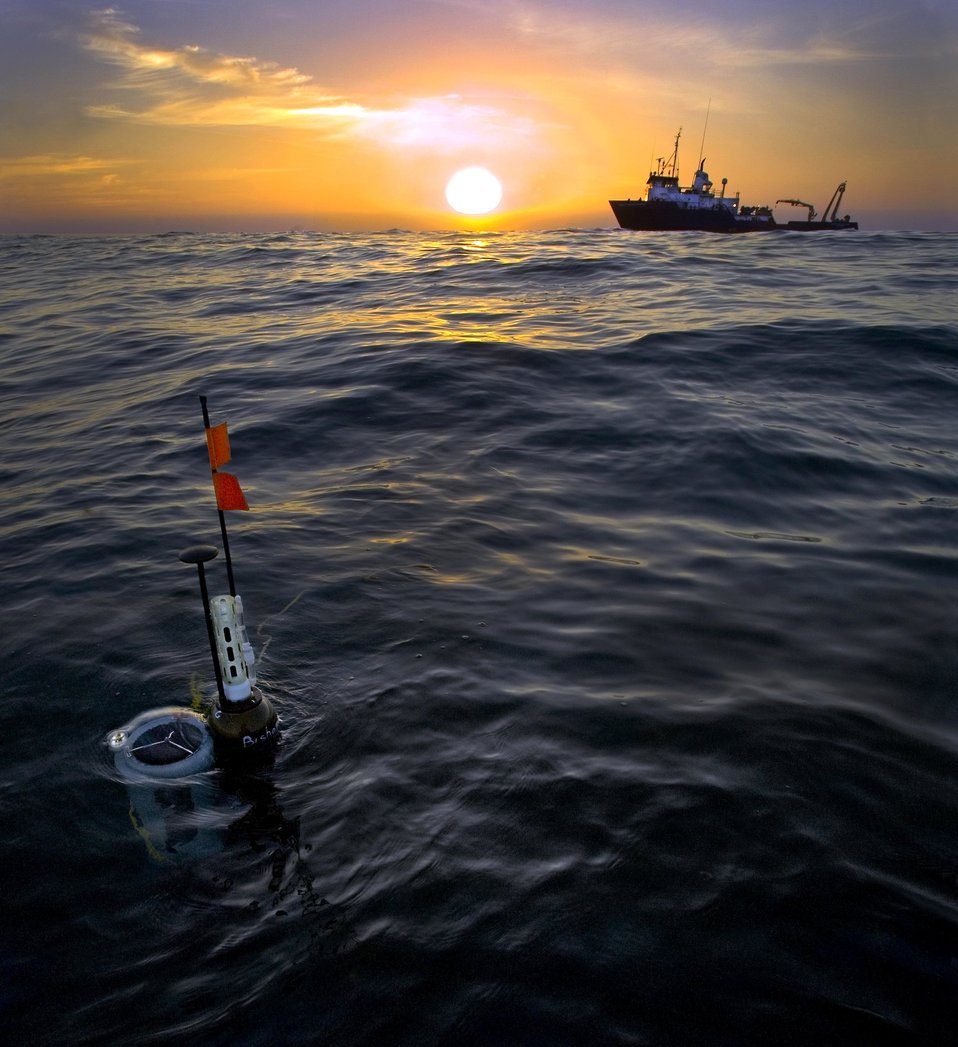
Carbon flux explorer awaiting recovery at Dawn at the end of its first 1.5 day mission led by LBNL Earth Science team in the San Clemente basin near San Diego, CA. Scripps research vessel Sproul in the background.